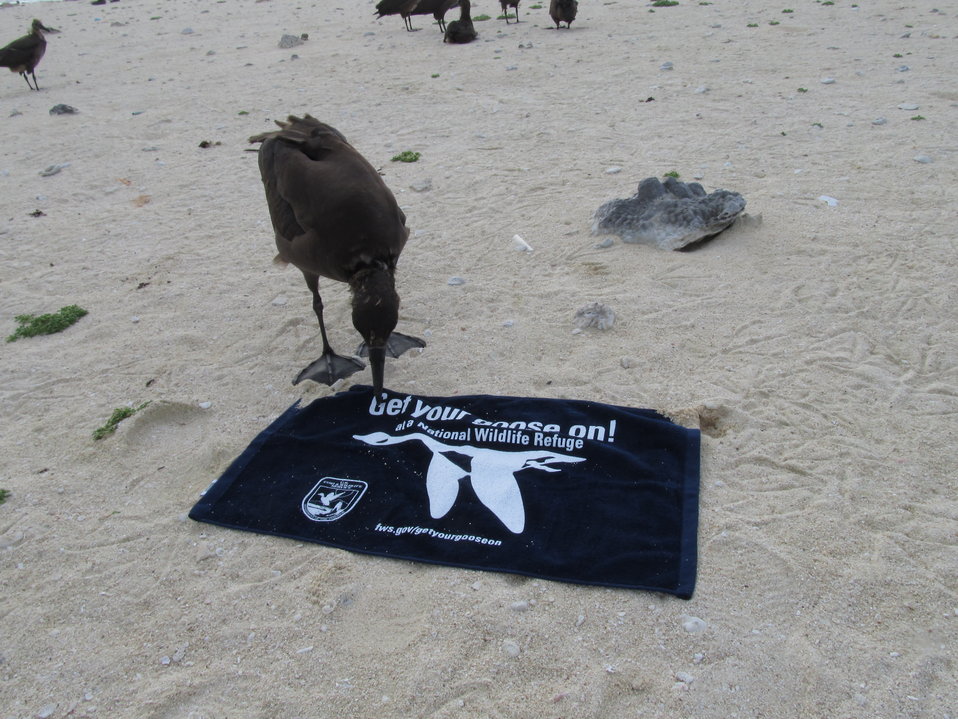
Get Your Goose On! - Albatross Style

Photo taken at Laysan Island in the Papahanaumokuakea Marine National Monument, Hawaiian Islands National Wildlife Refuge. Laysan is located approximately 800 miles northwest of Honolulu, Hawaii and is a remote field camp staffed year round for habitat restoration and population monitoring.